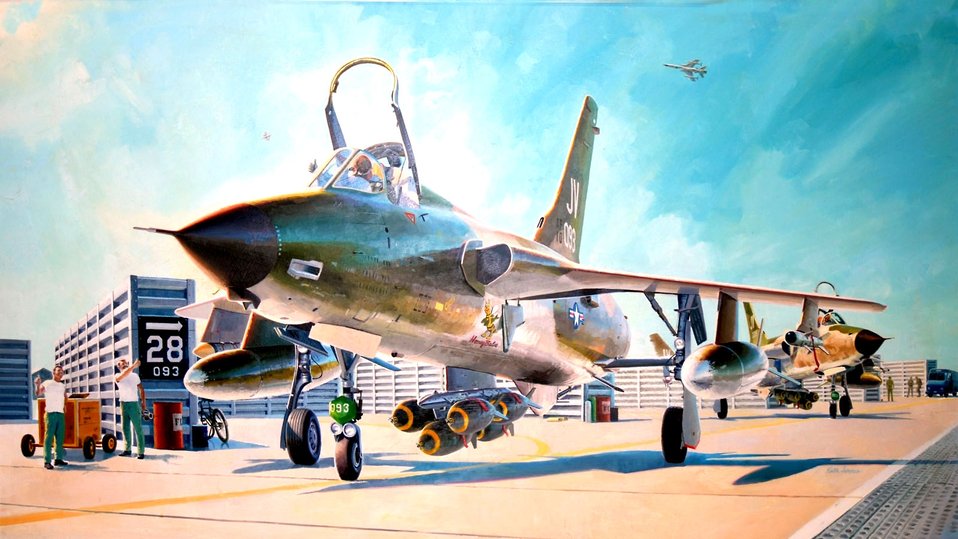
Museum commemorates 60th anniversary with art exhibit